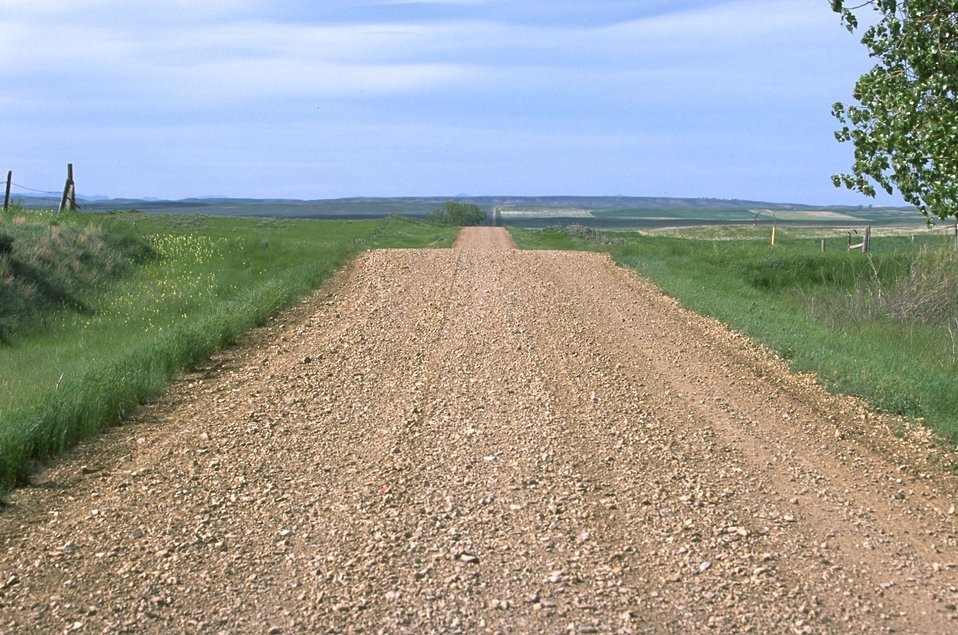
Knox Ridge Road in the Missouri Breaks Back Country Byway